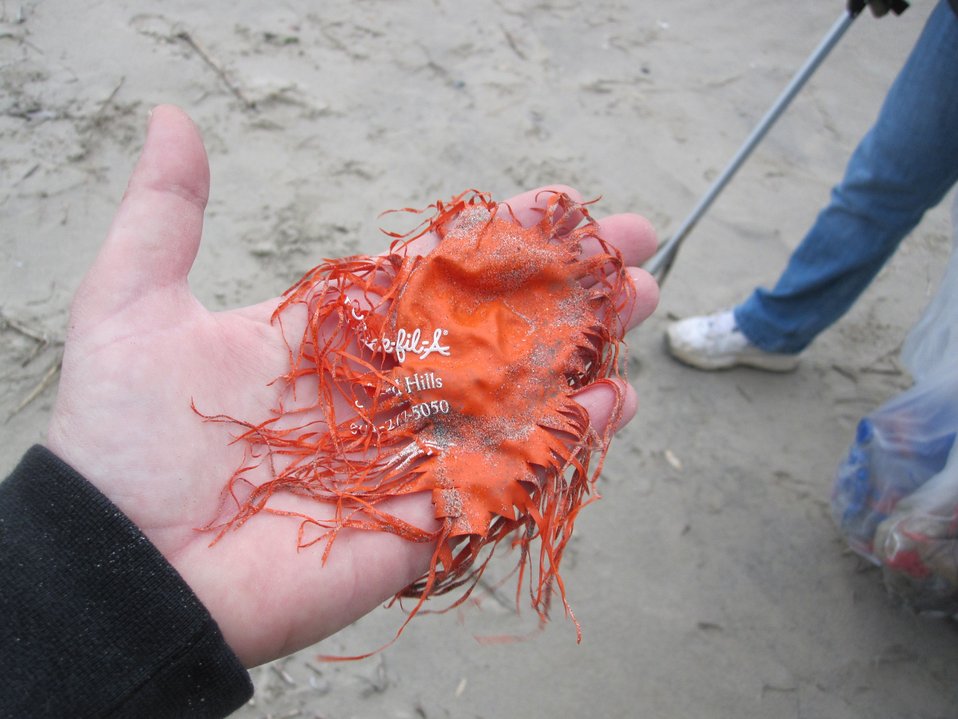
Balloon found on beach